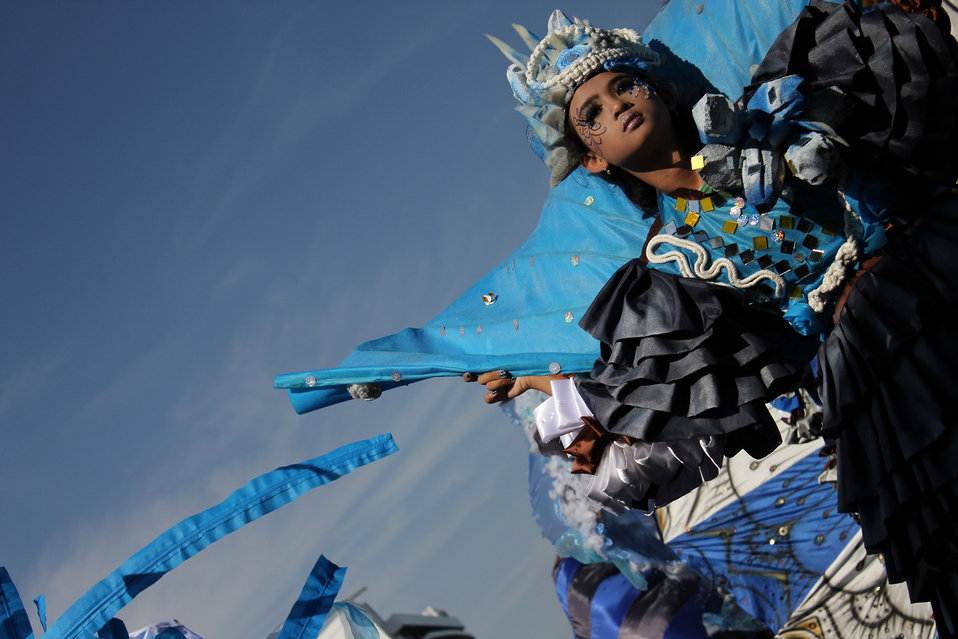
Costume and sky

Event in jember fashion carnival 2011.